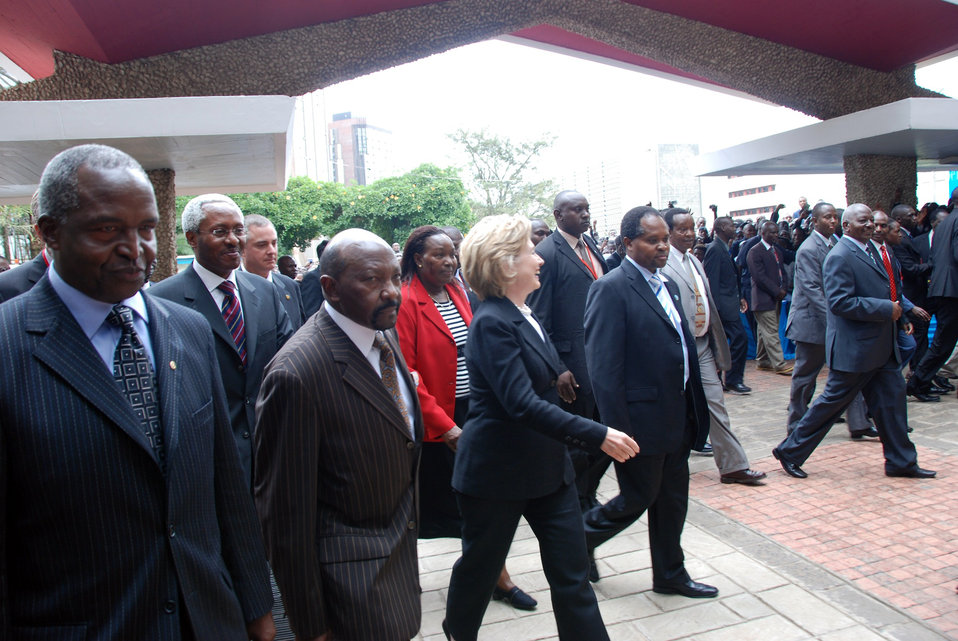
Secretary Clinton Visits Nairobi University

U.S. Secretary of State Hillary Rodham Clinton leaves after to a town hall meeting at the University of Nairobi in Nairobi, Kenya August 6, 2009.